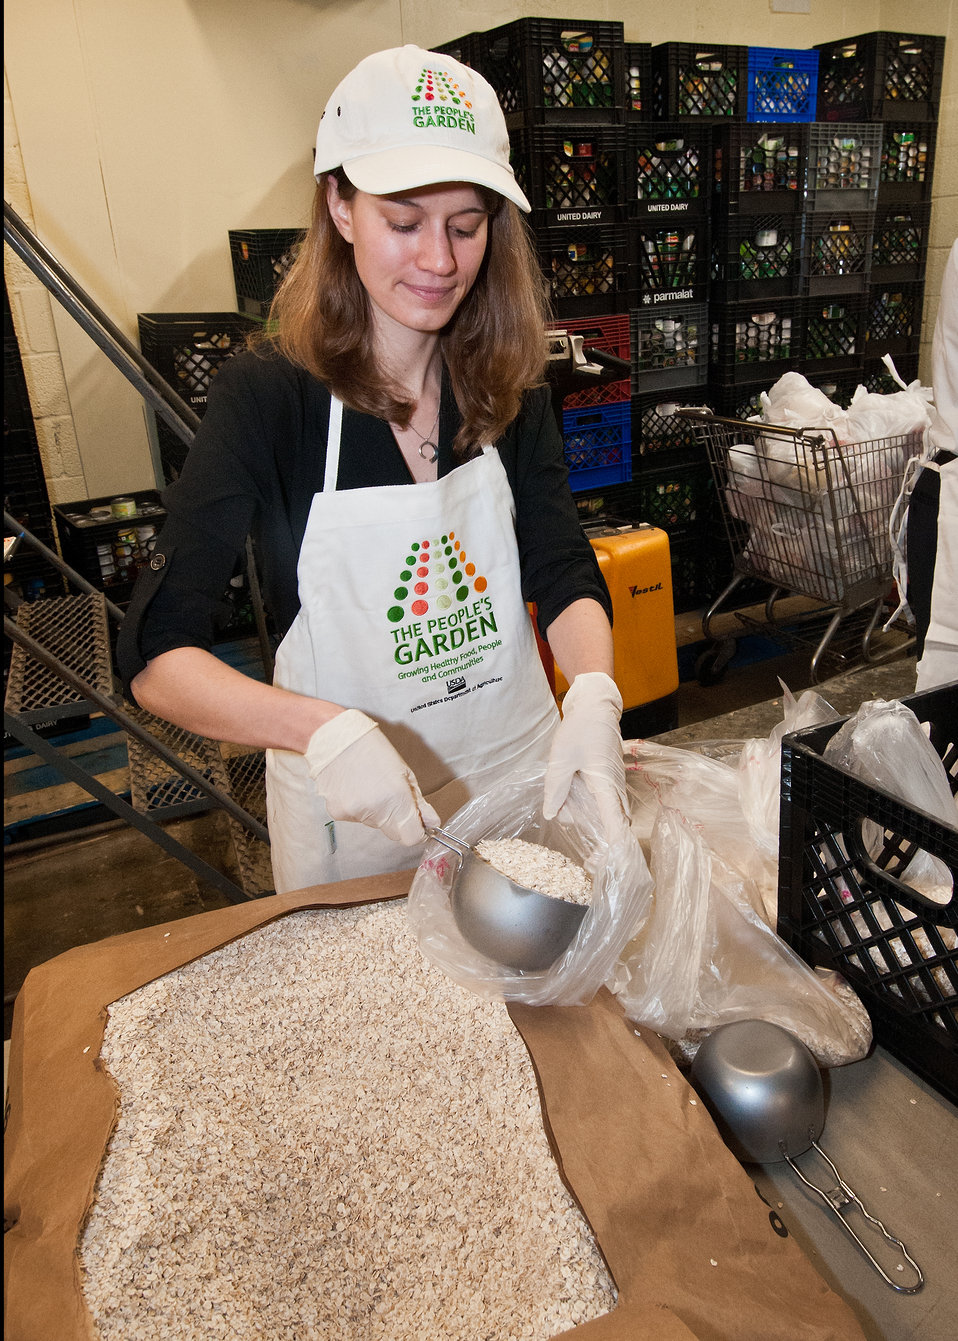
Julie Curti, Center for Faith Based and Neighborhood Partnerships fills bags with oatmeal purchased in bulk to be distributed by the Arlington Food Assistance Center in Arlington, Virginia, on Thursday, January 12, 2012. Agriculture Secretary Tom Vilsack designated January 12 as the United States Department of Agriculture’s Martin Luther King Day of Service to recognize Dr. King’s contributions to the Civil Rights Movement. The AFAC is Arlington, Virginia’s food pantry providing supplemental and nutritious food free of charge to Arlington families who cannot afford to purchase all the food they need. The center receives United States Department of Agriculture foods through The Emergency Food Assistance Program (TEFAP) administered by the USDA Food and Nutrition Service from the Capital Area Food Bank.